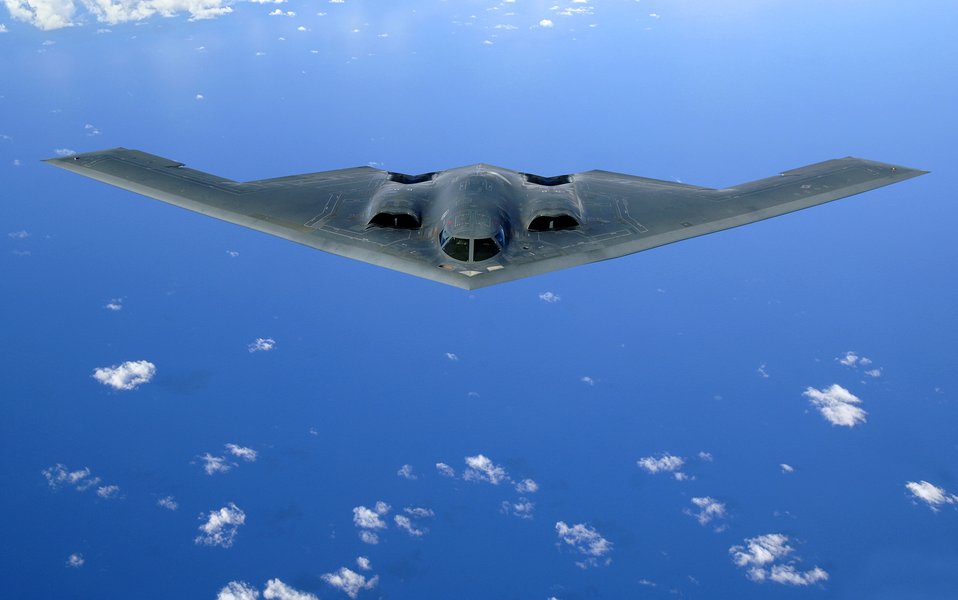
B-2 radar modernization program contract awarded

Air Force officials have awarded a contract to Northrop Grumman Corporation to provide advanced state-of-the-art radar components as part of a radar modernization program for the for the B-2 Spirit bomber.